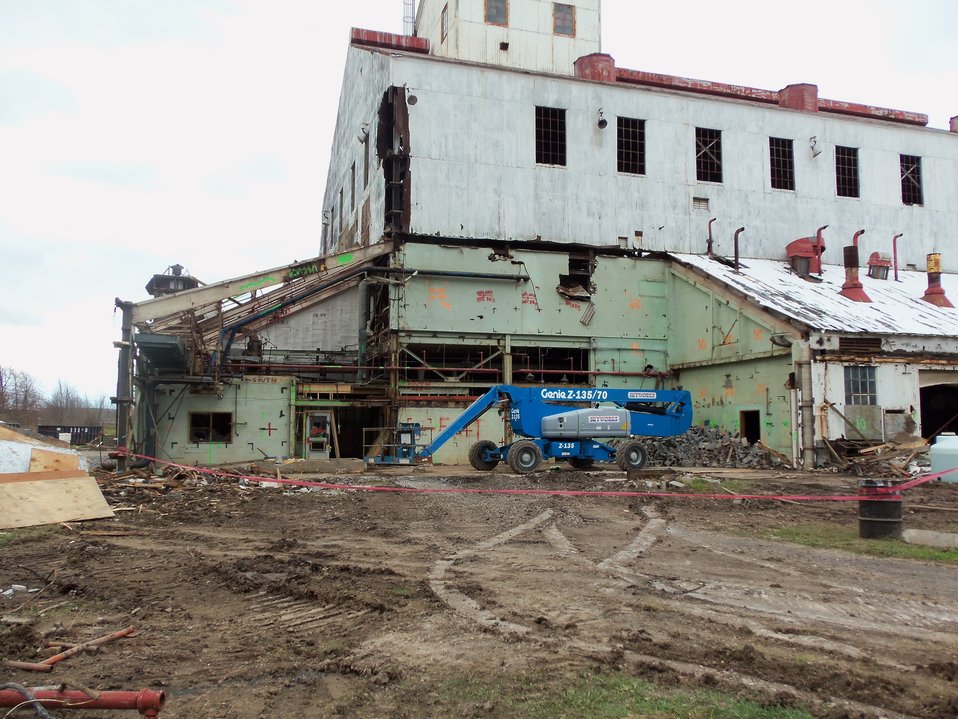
NFSS BUILDING 401 SIDING REMOVAL

Activities from the Niagara Falls Storage Site, which is associated with the former Lake Ontario Ordnance Works. Formerly Utilized Sites Remedial Action Program (FUSRAP), a program initiated in 1974 to identify, investigate and clean up or control sites that were part of the Nation's early atomic energy and weapons program. Activities at the sites that are eligible for FUSRAP were conducted by Manhattan Engineer District (MED) or the Atomic Energy Commission (AEC), both predecessors of the Department of Energy (DOE). The U.S. Army Corps of Engineers was assigned management of FUSRAP by Congress in 1997.